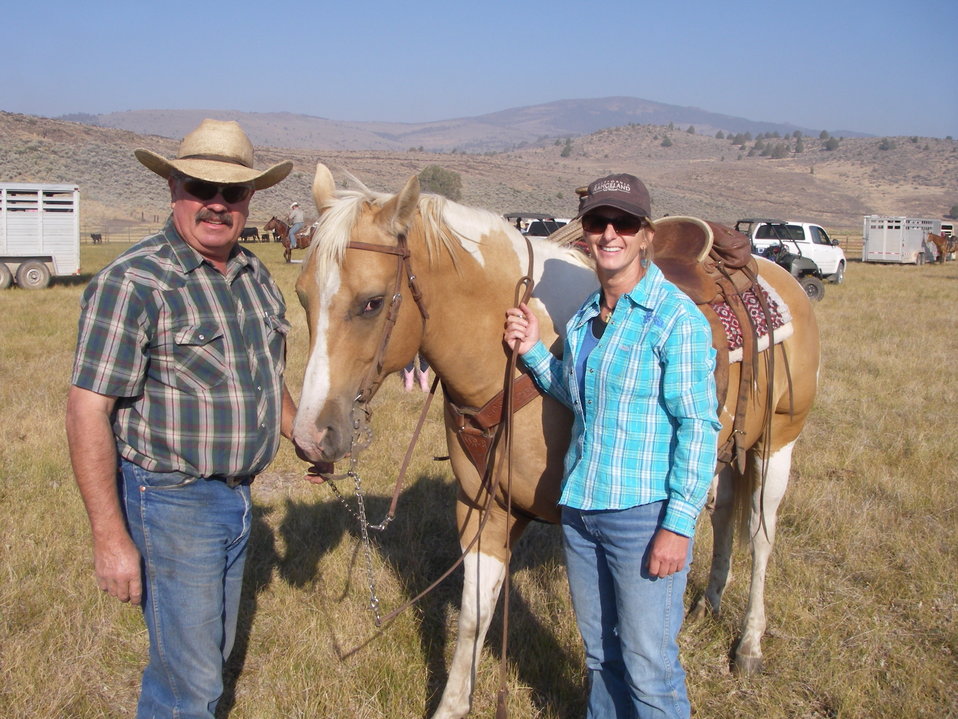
Darrell Wood (landowner) and Ceci Dale-Cesmat (NRCS - California)